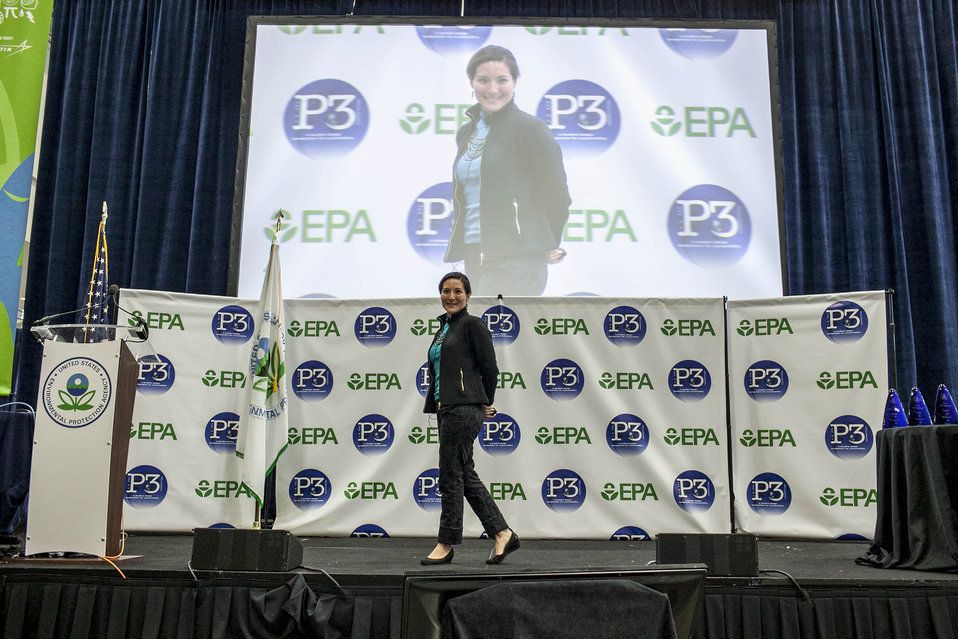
2014 P3 Competition

Catlin Powers, 2012 P3 Award winner and co-founder of One Earth Designs gives the keynote address.